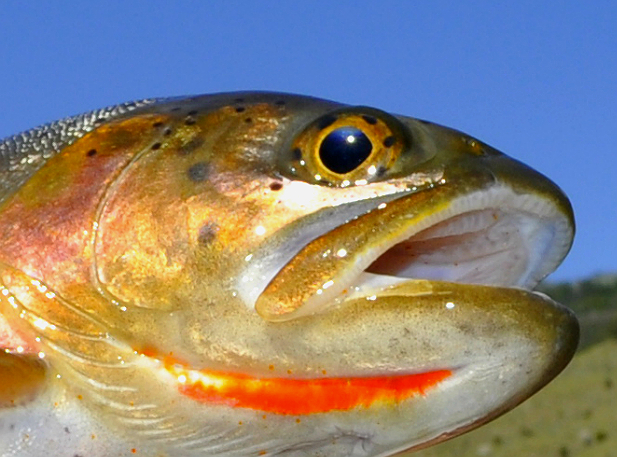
Yellowstone Cutthroat Trout

A Native Yellowstone River Cutthroat Trout. These beautiful fish play a critical role in the Greater Yellowstone Ecosystem to read more check out this link.